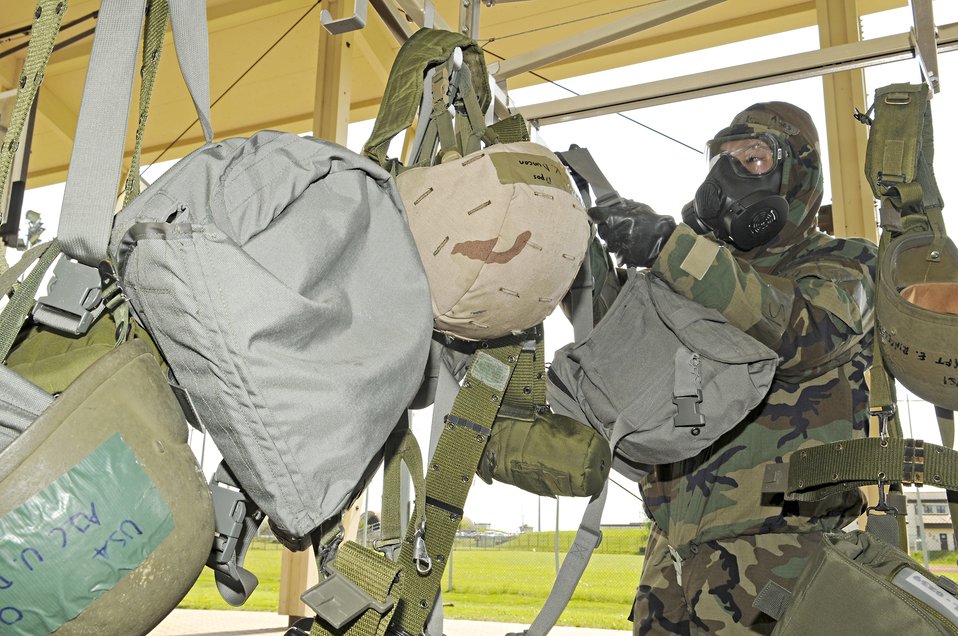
Airmen practice contamination control

Airman 1st Class Raymond Kim hangs his external equipment at a contamination control area during training May 20, 2010, at Spangdahlem Air Base, Germany. Airman Kim is with the 52nd Component Maintenance Squadron.